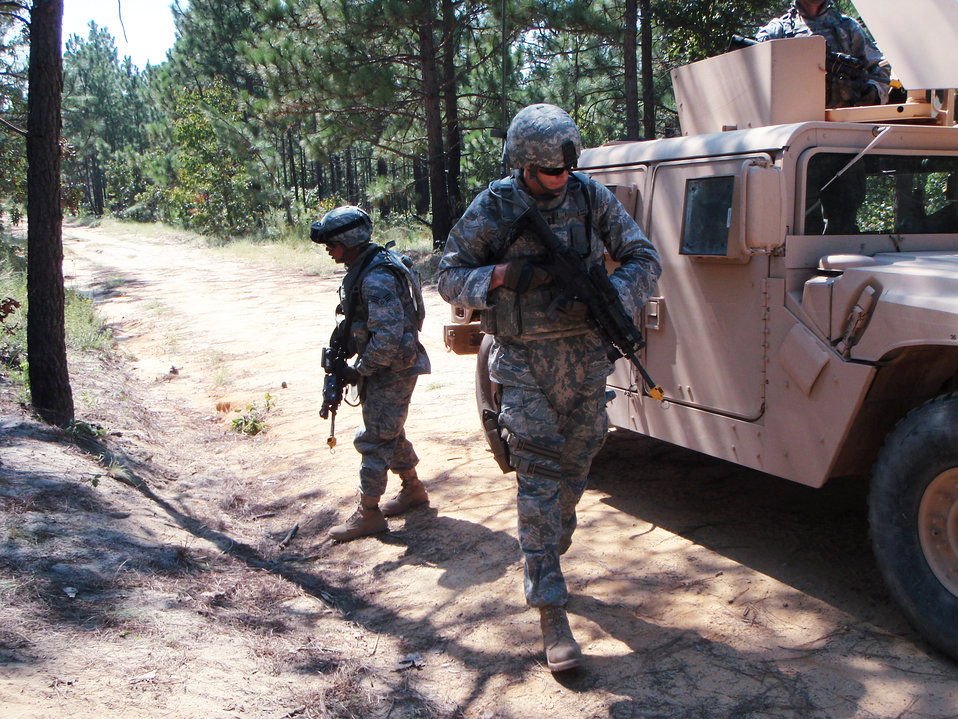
Airmen and Soldiers train for Zabul Provincial Reconstruction Team

Senior Airman Robert Cabato (left) and Capt. Nathan Olsen conduct five and 25 meter checks for improvised explosive devices during recent convoy training here. Both Airmen are a part of the Zabul Reconstruction Team, and are training for an upcoming deployment. Captain Olsen is deployed from the 375th Civil Engineer Sqaurdon at Scott Air Force Base, Ill., and Airman Cabato is deployed from the 18th Operations Group at Kadena Air Base, Japan.